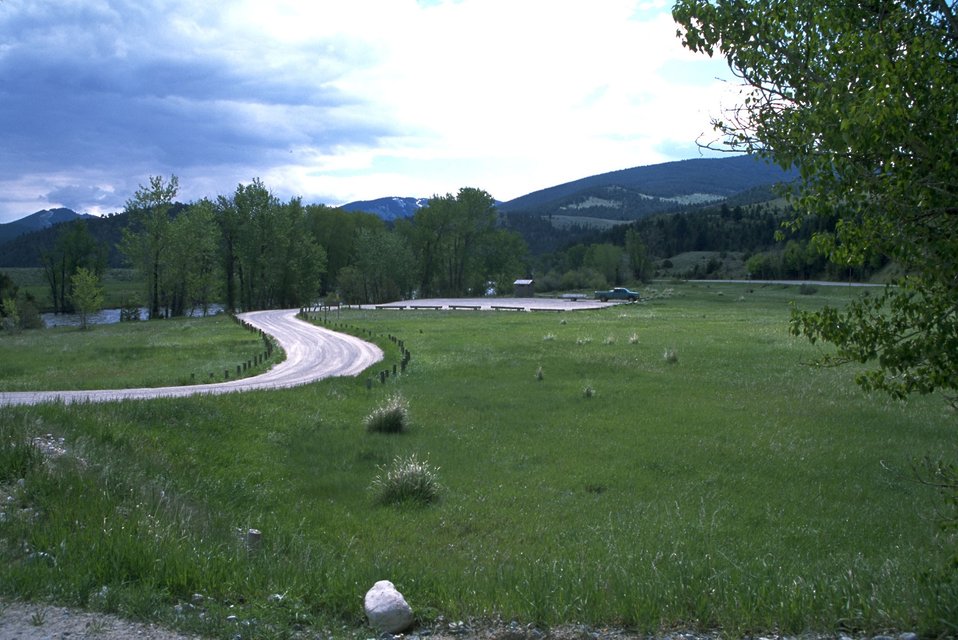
The parking lot at Jerry Creek Day Use Area